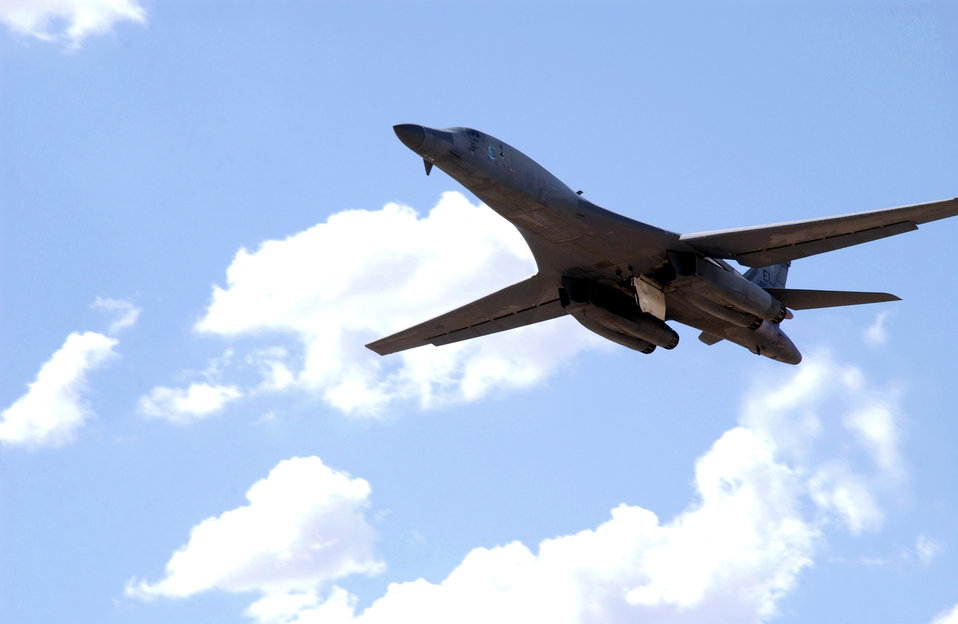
Back in action

DAVIS-MONTHAN AIR FORCE BASE, Ariz. -- Workers from the Aerospace Maintenance and Regeneration Center here and maintainers from the 654th Combat Logistics Support Squadron at Tinker Air Force Base, Okla., have regenerated the first B-1B Lancer. After two months of flight preparations, the B-1B took off Sept. 2 for Dyess AFB, Texas. The Lancer, Serial No. 86-0097, entered storage at the center in April 2003 under the Air Force's B-1B consolidation plan. In early 2004, the commander of Air Combat Command directed the recall of this B-1B to supplement fleet requirements supporting the war on terrorism.